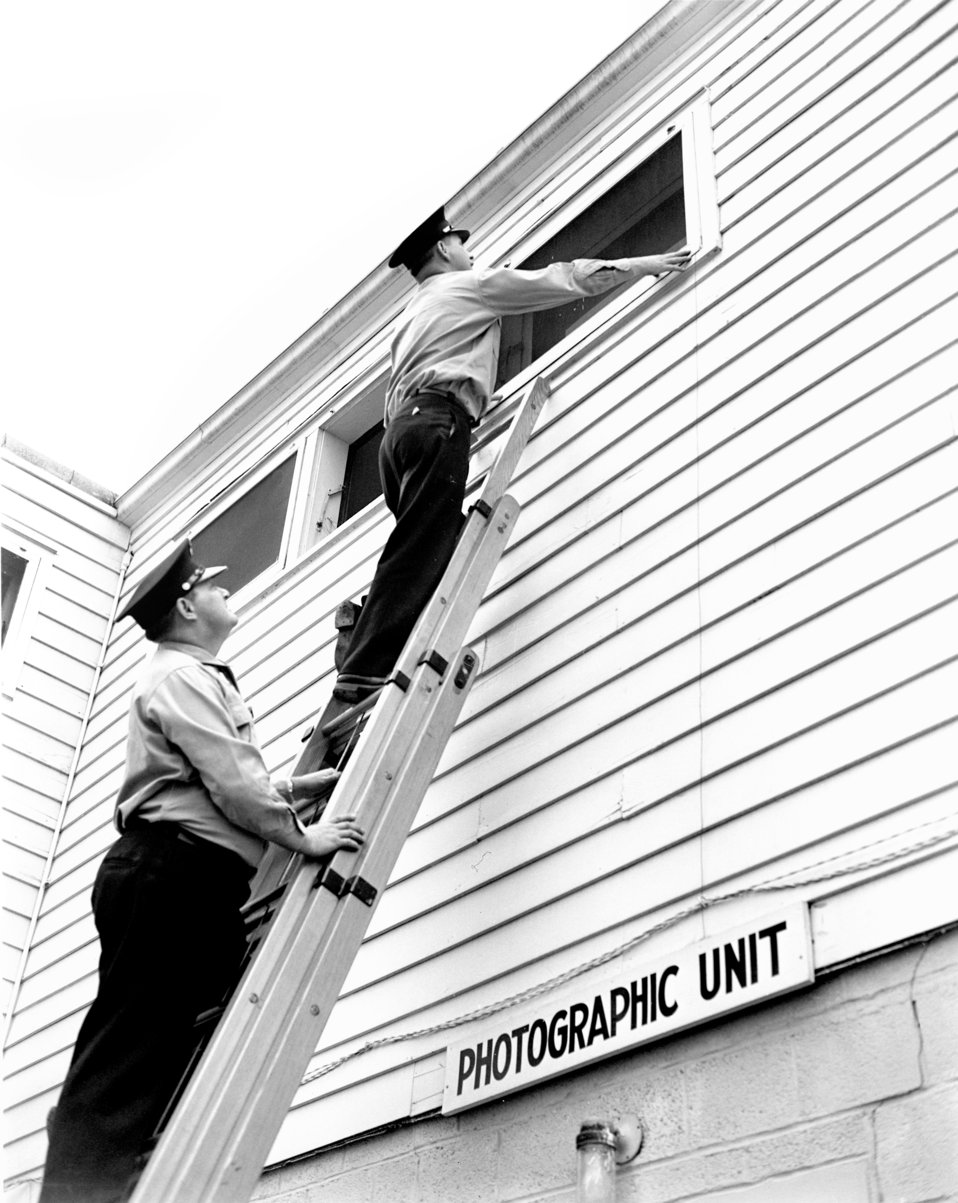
Fire Department Repairing Screens Oak Ridge 1947

32279-1 DOE photo Ed Westcott 1-27-1947 Oak Ridge Tennessee